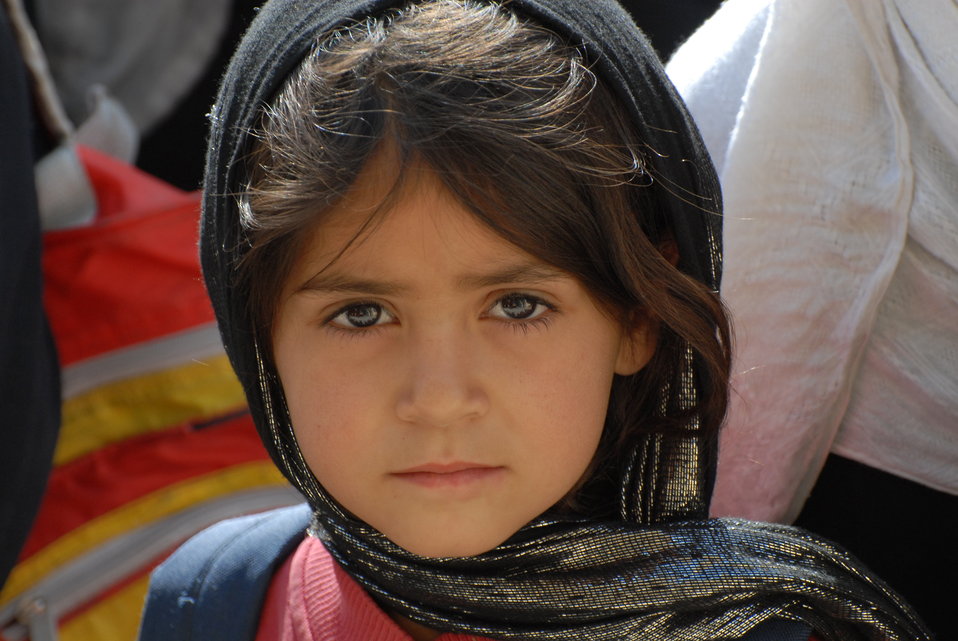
'On the Road' in Balkh Province